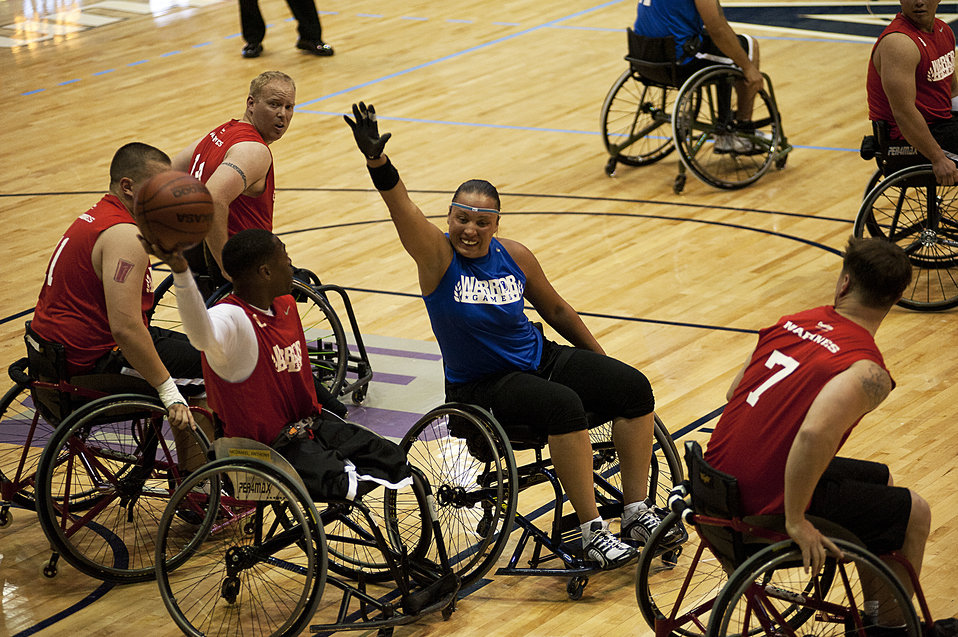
Warrior Games

Jennifer Stone guards a member of the Marine Corps team as they take part in a wheel chair basketball game May 4, 2012, during the 2012 Warrior Games at the U.S. Air Force Academy in Colorado Springs, Colo. The Air Force lost to the Marines by a score of 37-21, but won the bronze medal.